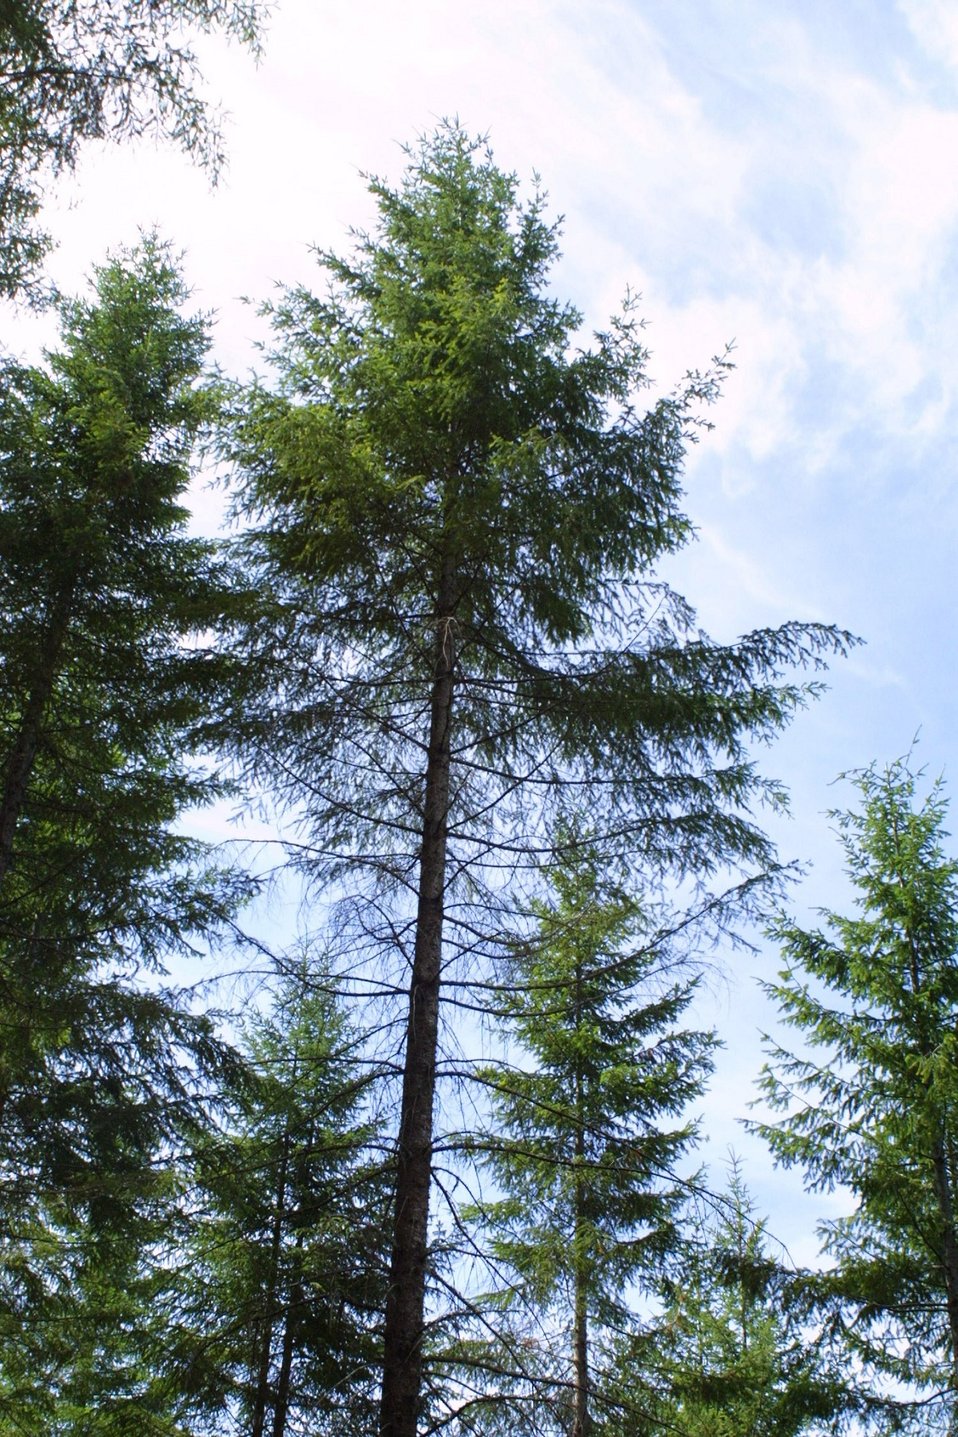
Camas East Timber Sale in Late Successional Reserve.